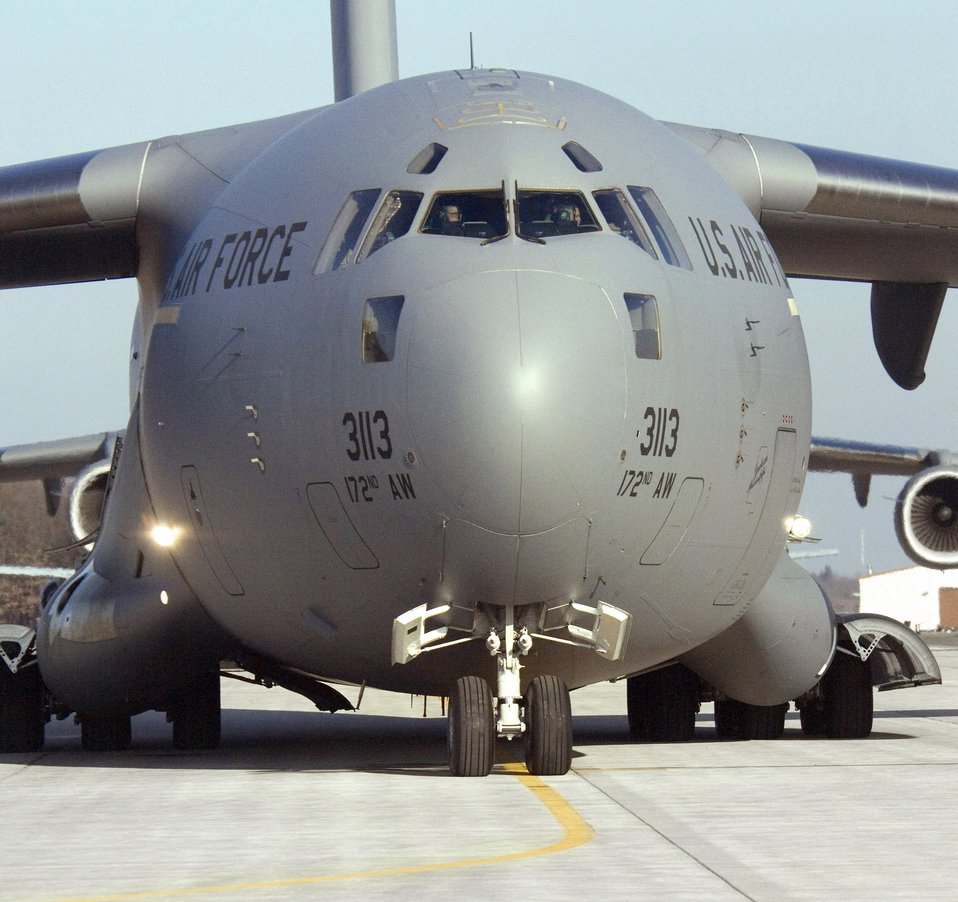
C-17 surpasses its 1 millionth flying hour

An Airman marshals a C-17 Globemaster III as it begins a mission from Ramstein Air Base, Germany, on Sunday, March 19, 2006. The Mississippi Air National Guard transport delivered cargo to Al Asad, Iraq, and returned from Balad Air Base, Iraq, as an aeromedical mission which put the air transport past the 1 millionth hour of flight time.